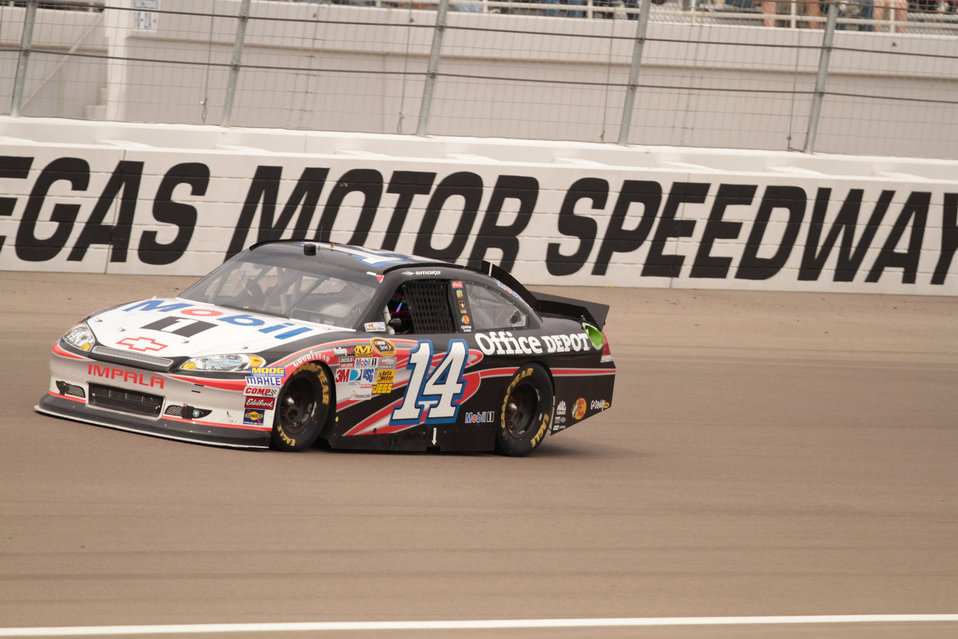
The winner

Nascar las vegas motor speedway 2012.